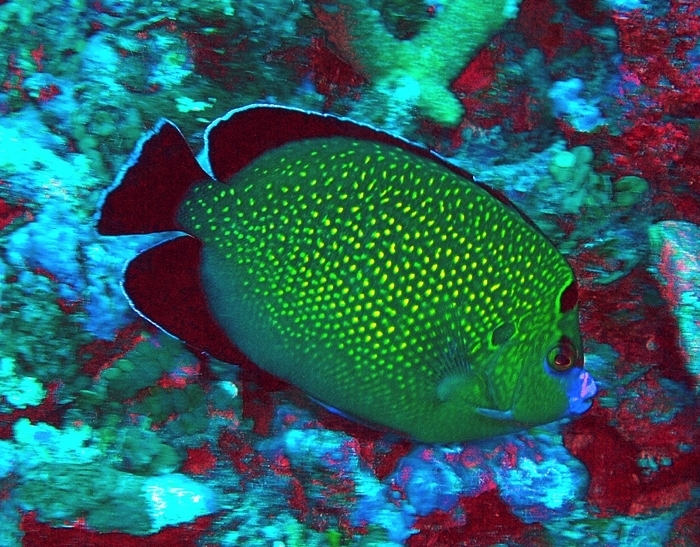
Golden-spotted angelfish at Baker island NWR

Apolemichthys Xanthopunctatus, a golden-spotted angelfish, cruises along the coral at Baker Island National Wildlife Refuge in the Pacific Ocean 1,600 miles southwest of Honolulu.